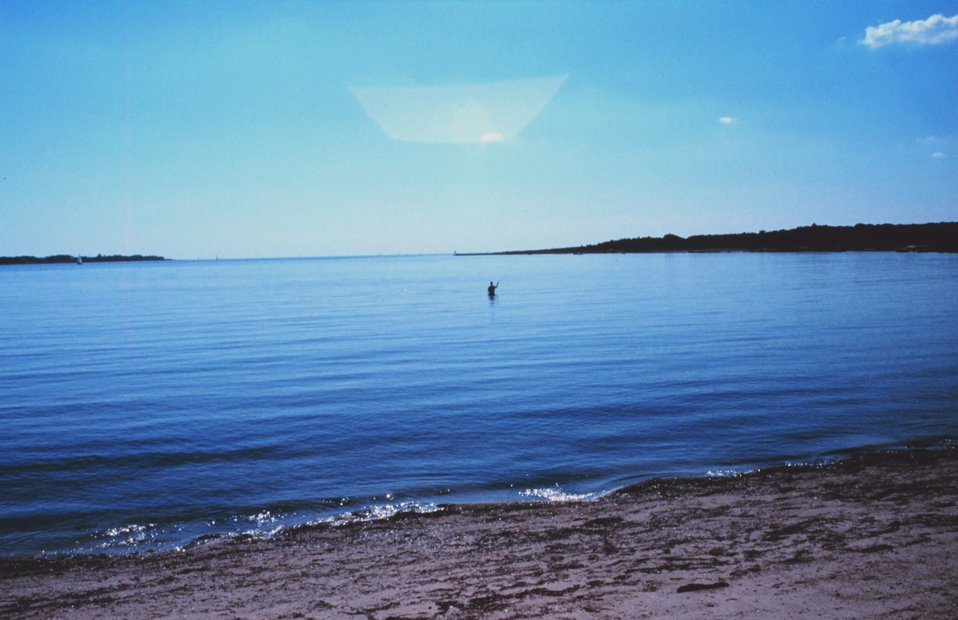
Buzzards Bay, North Falmouth